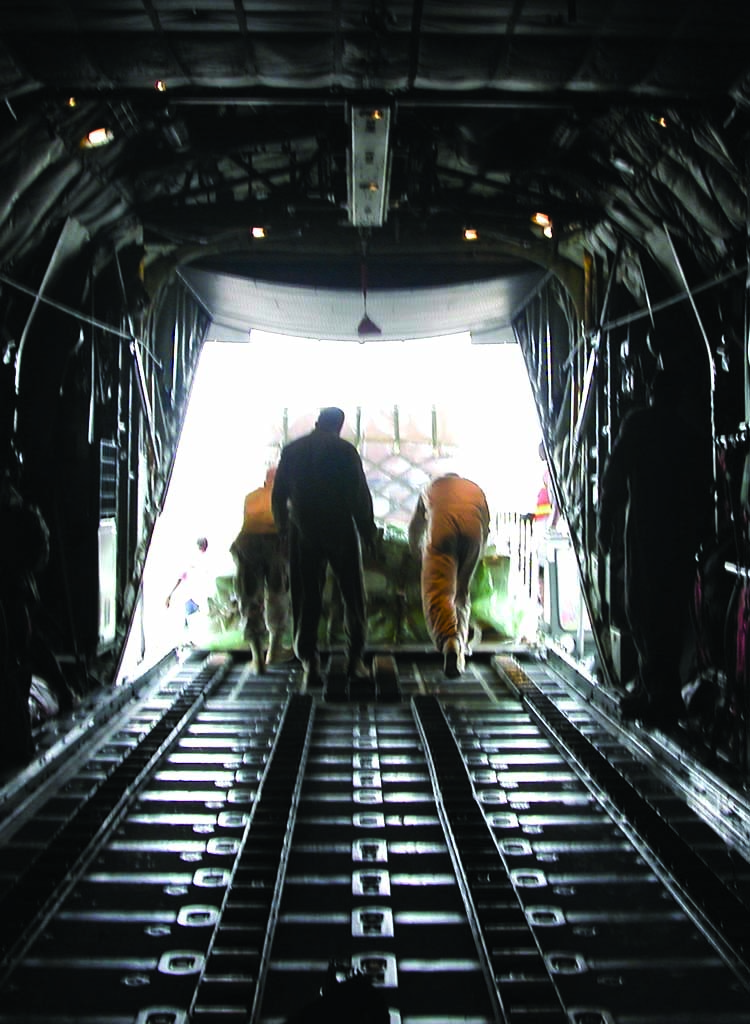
C-130 crew delivers cargo, morale to remote locations

SEYCHELLES ISLANDS -- A C-130 Hercules crew unloads a cargo pallet here. They are assigned to the 746th Expeditionary Airlift Squadron.